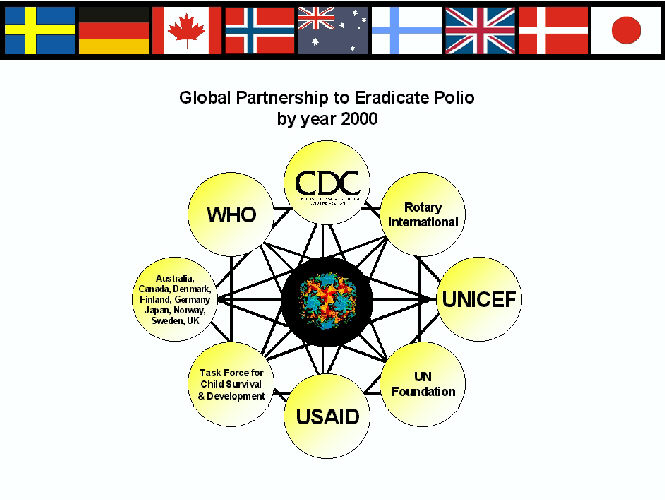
Global partnership to eradicate polio.